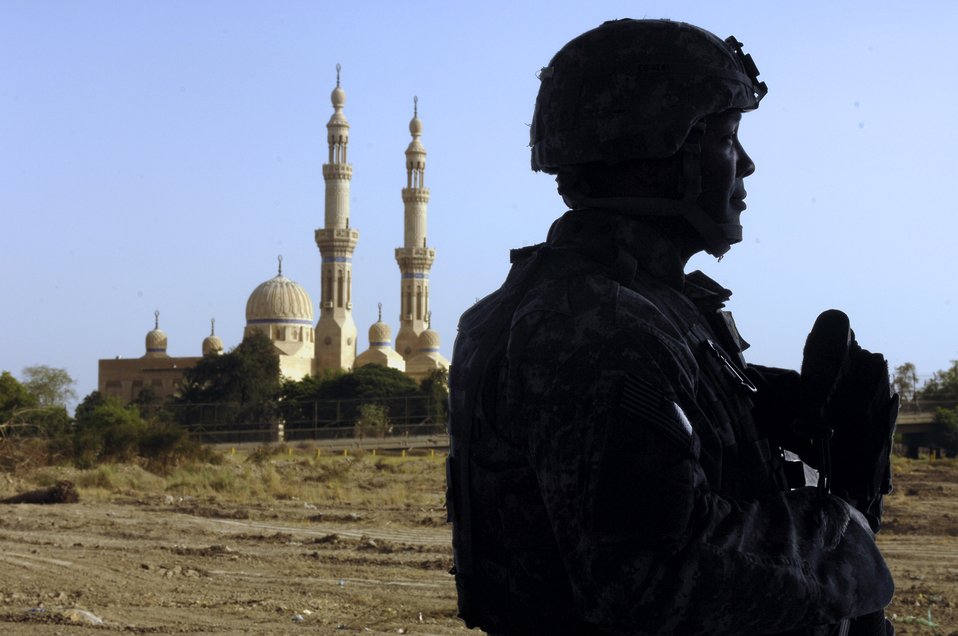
Protecting and serving

A service member keeps watch for insurgent activity in Al Furat, Iraq, Aug. 9 while Iraqi citizens walk to pray in Kandahar during the 7th Imam holy day.